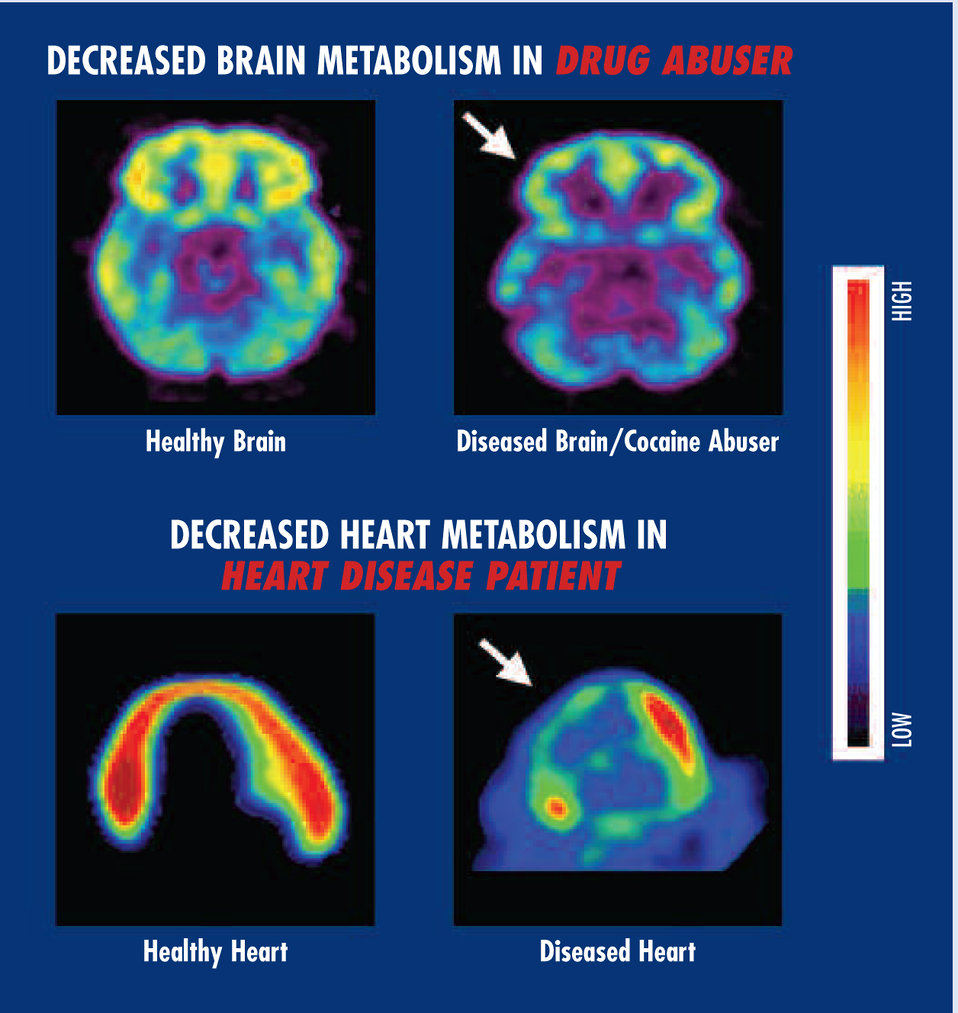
Brain Metabolism

Like heart disease, drug addiction can be prevented and treated successfully. If left untreated, however, its effects can last a lifetime.